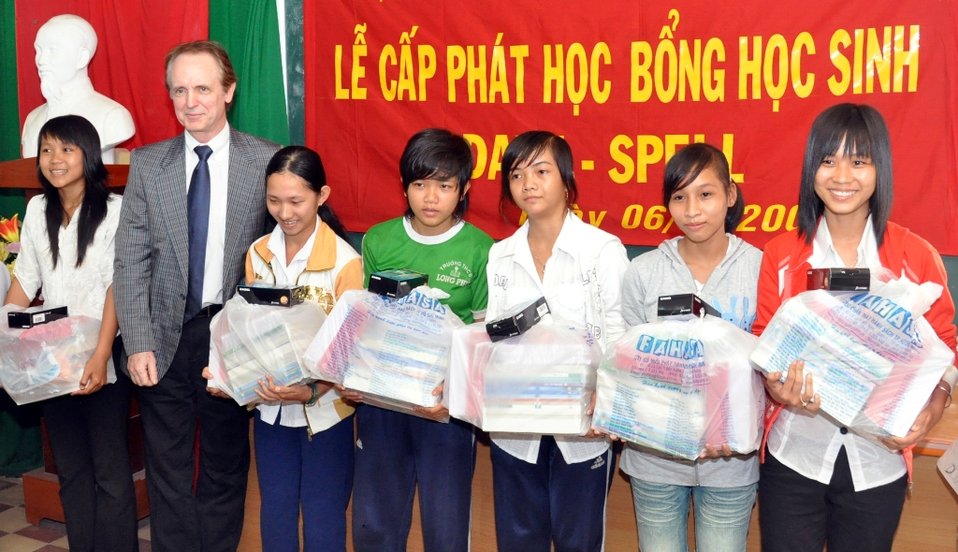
USAID supports girls education